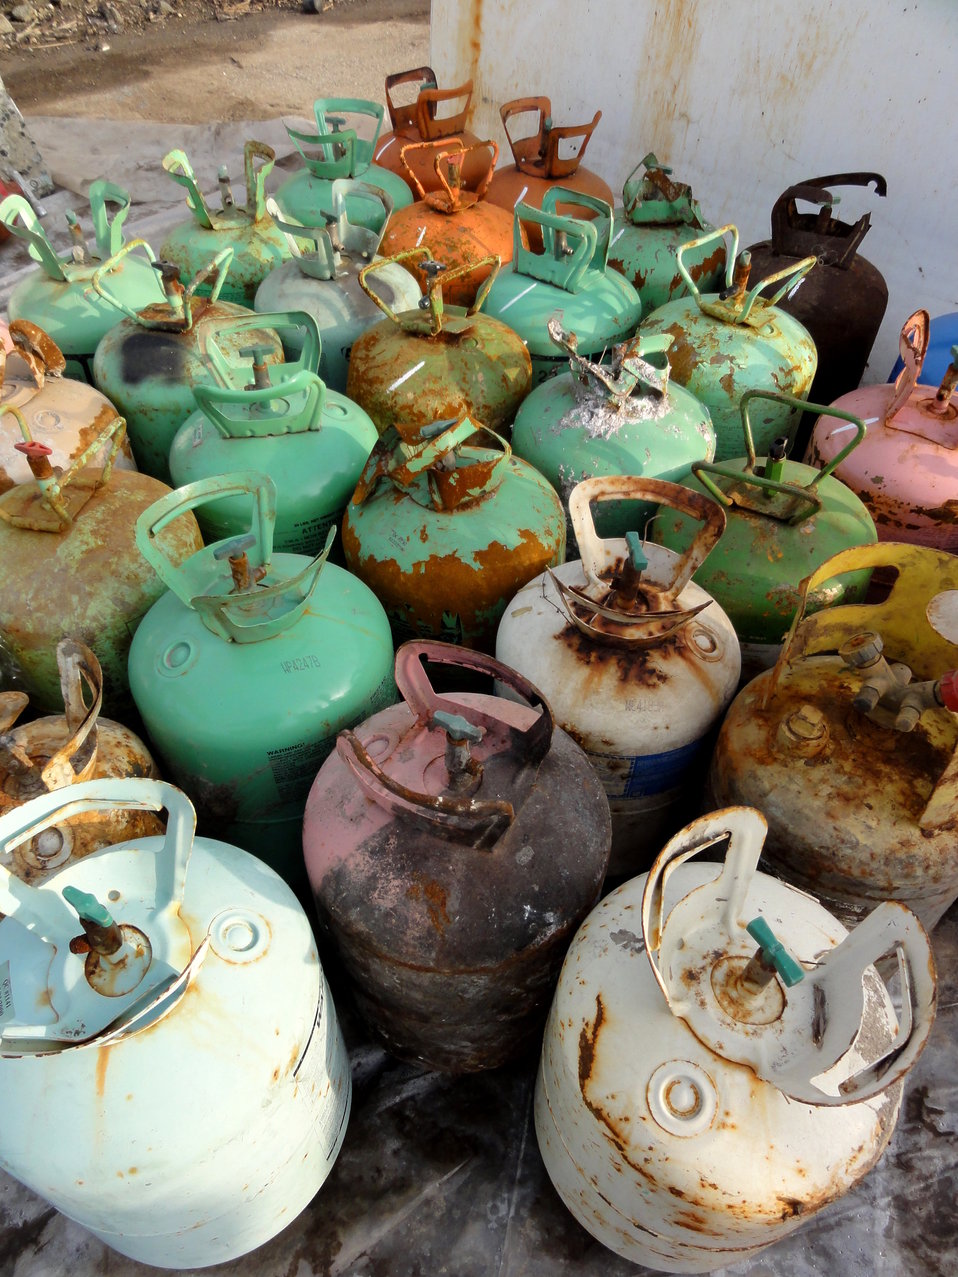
December 2, 2012 - Colorful Freon tanks, ready for recycling.

Since EPA's response to Hurricane Sandy began, 45 freon tanks have been staged and are awaiting reclamation/recycling.